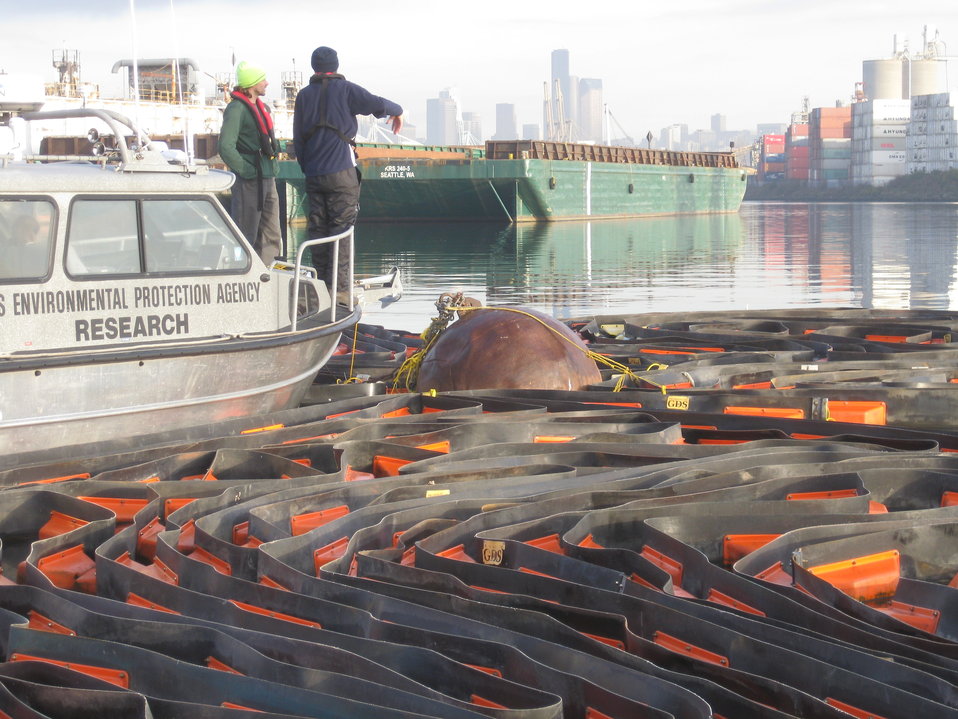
January 15, 2013 - The Busy Duwamish Waterway

Anchoring up to retrieve a passive sampler below. Staged boom surrounds this sampling site.

A century of heavy industrial use has left the waterway contaminated with toxic chemicals from many sources – industries along its banks, stormwater pipes, and runoff from upland activities, streets and roads.

Many of these chemicals stay in the environment for a long time, and have built up to unsafe levels in resident fish and shellfish. Because of contamination, state and local health departments warn against eating crab, shellfish, or bottom-feeding fish from the Lower Duwamish River. Migratory salmon are considered safe as they move quickly through the waterway into the Green River watershed.

Lower Duwamish Waterway Superfund Site

More about this sampling event

To find out more about EPA diving nationally, visit: www.facebook.com/EPAdivers